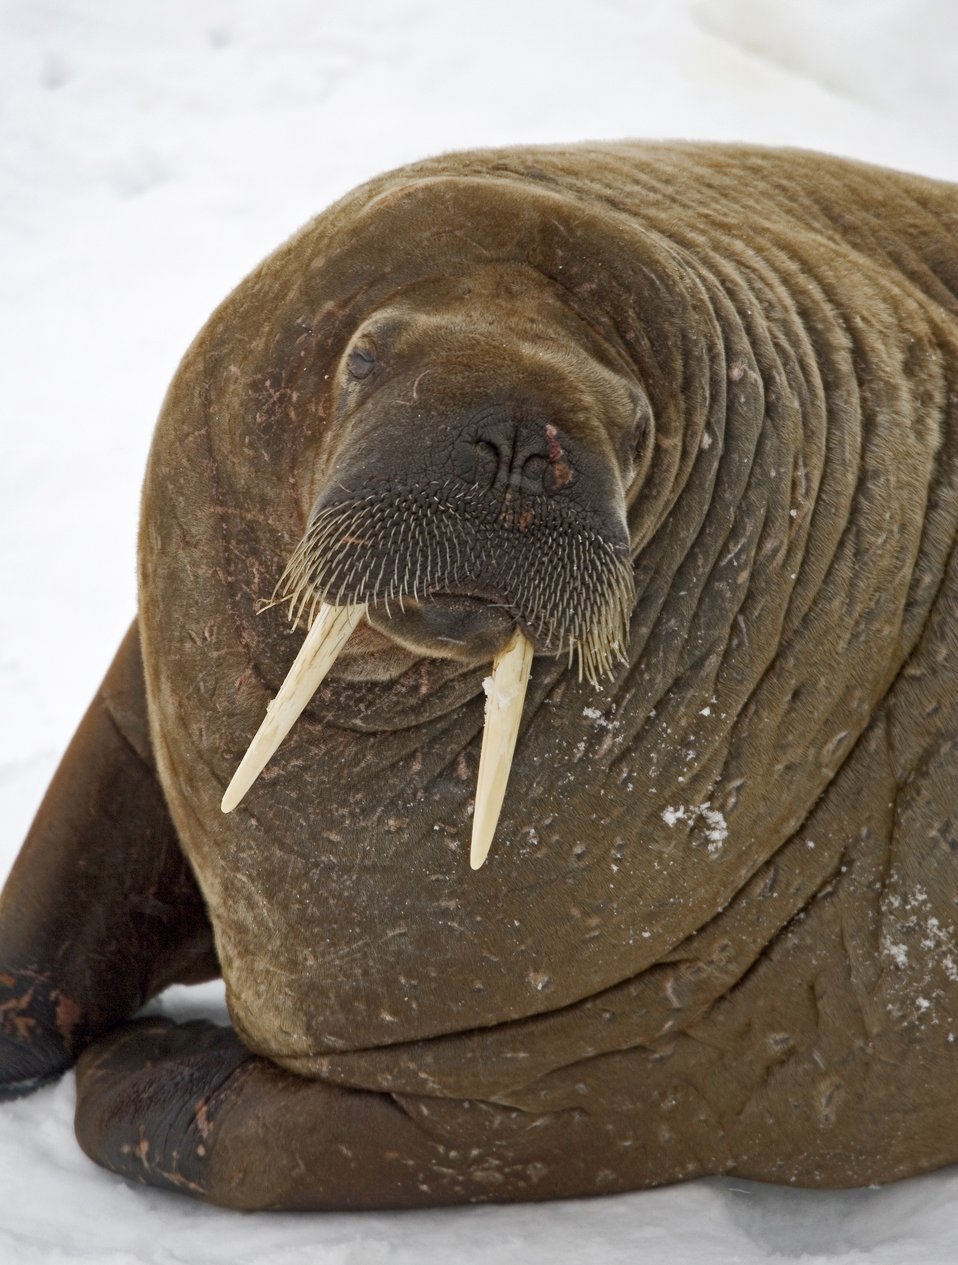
A walrus on the ice in the Arctic Ocean north of western Russia. Odobenus rosmarus rosmarus - the Atlantic subspecies of walrus.